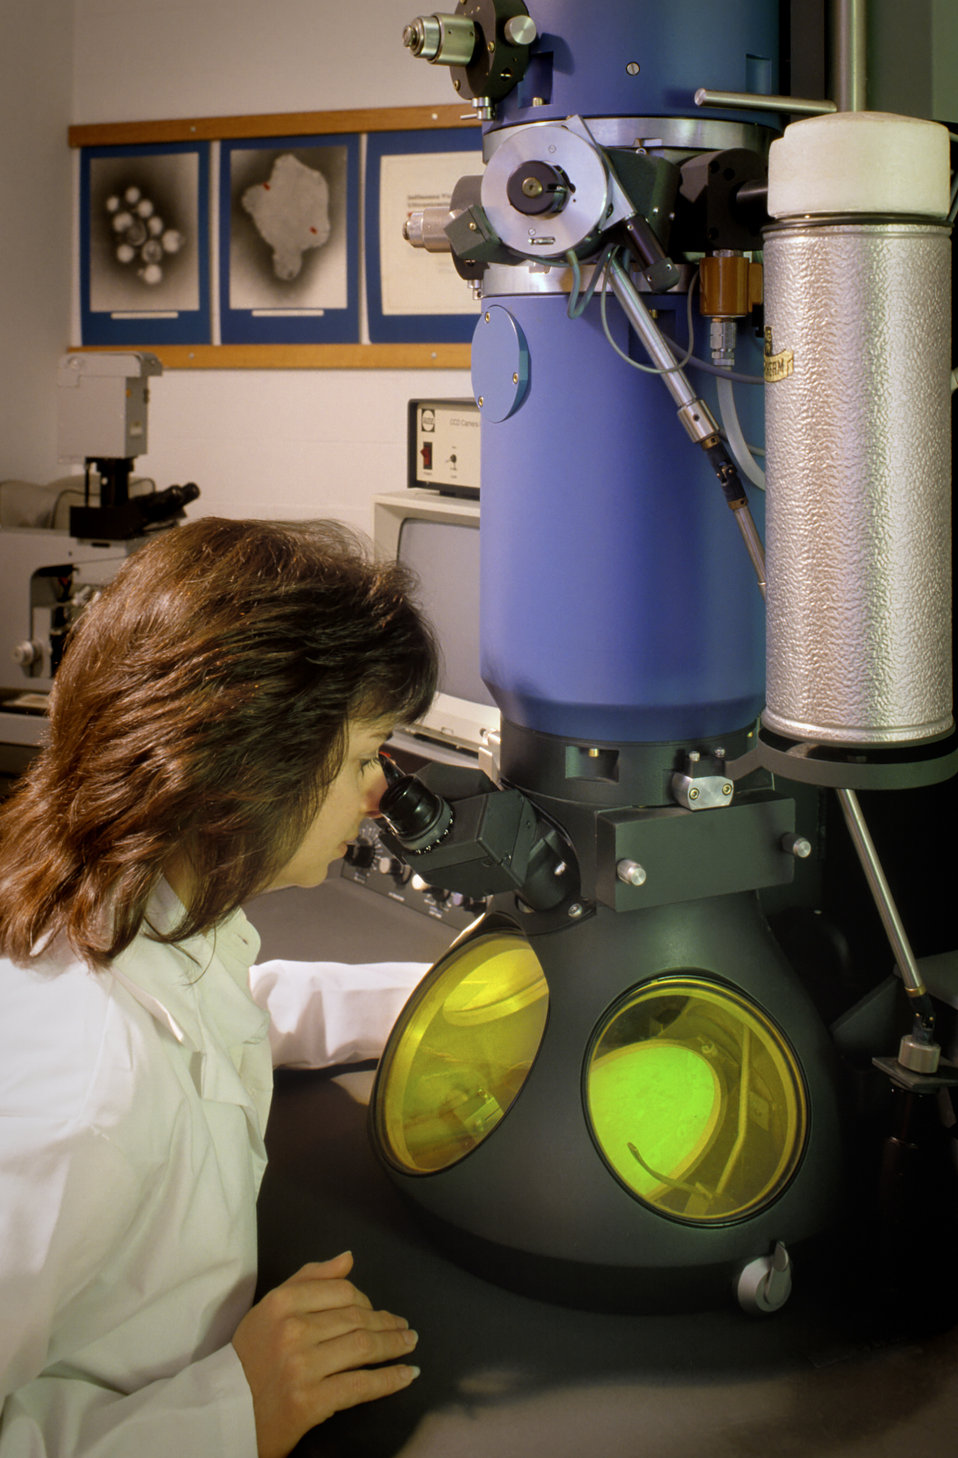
Photograph of CDC biologist Cynthia Goldsmith working at an electron microscope.